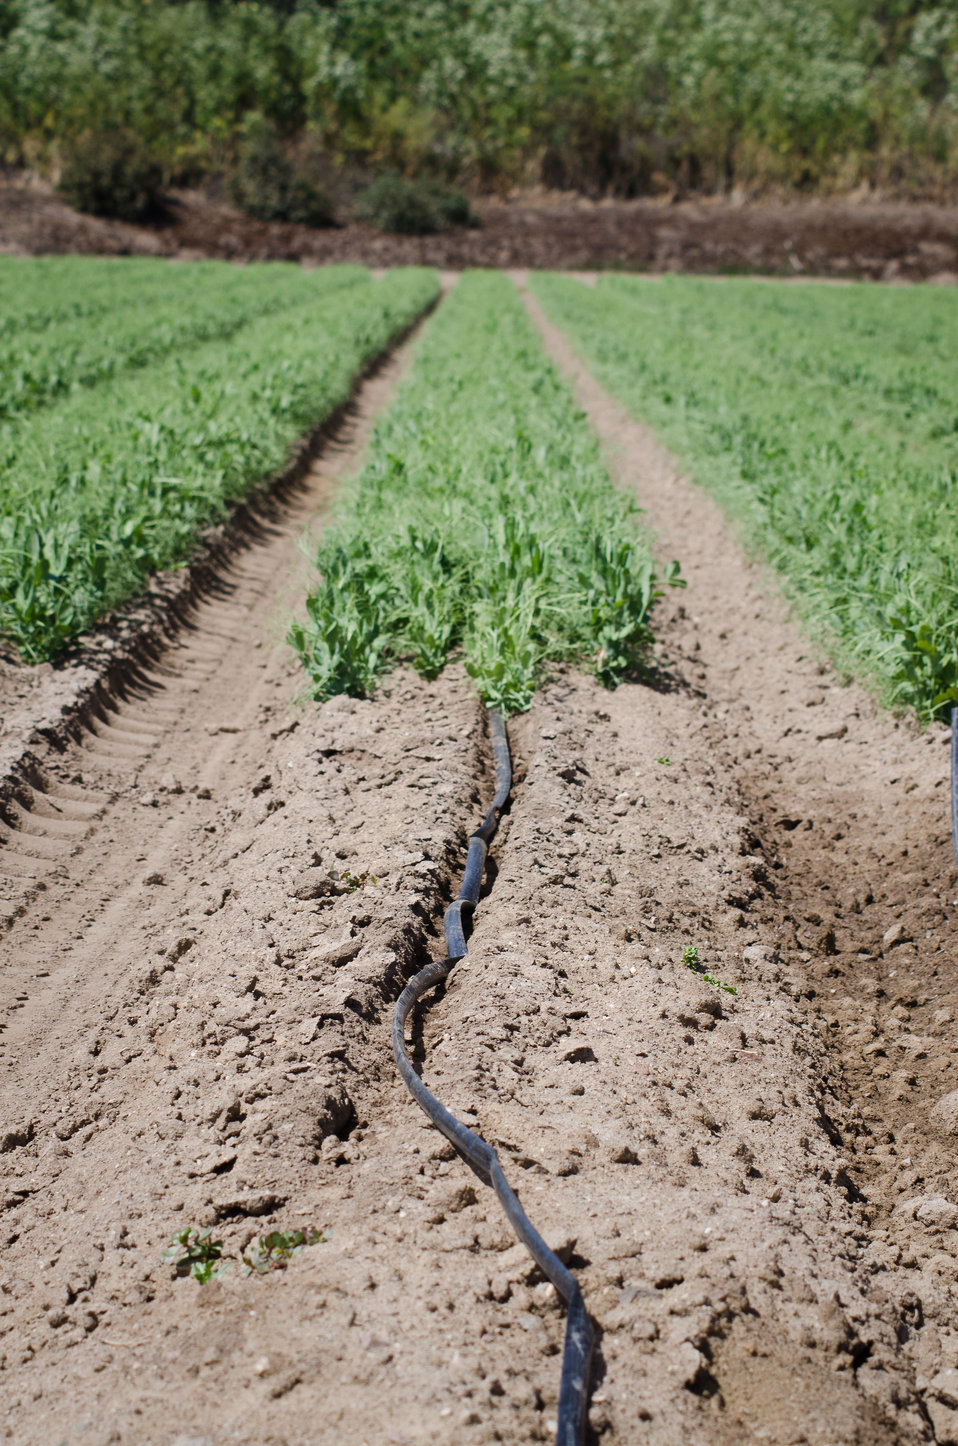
One hundred foot long micro irrigation tubes distribute water at Leafy Greens Farms in the Salinas Valley, California on Thursday, June 16, 2011 A series of reduction couplings lead to the collapsible header tube that supply water to dozens of separate tubes. That take water to every plant in the row. Water evaporation is kept to a minimum because water is delivered to the soil, not sprayed into the air or to exposed areas.